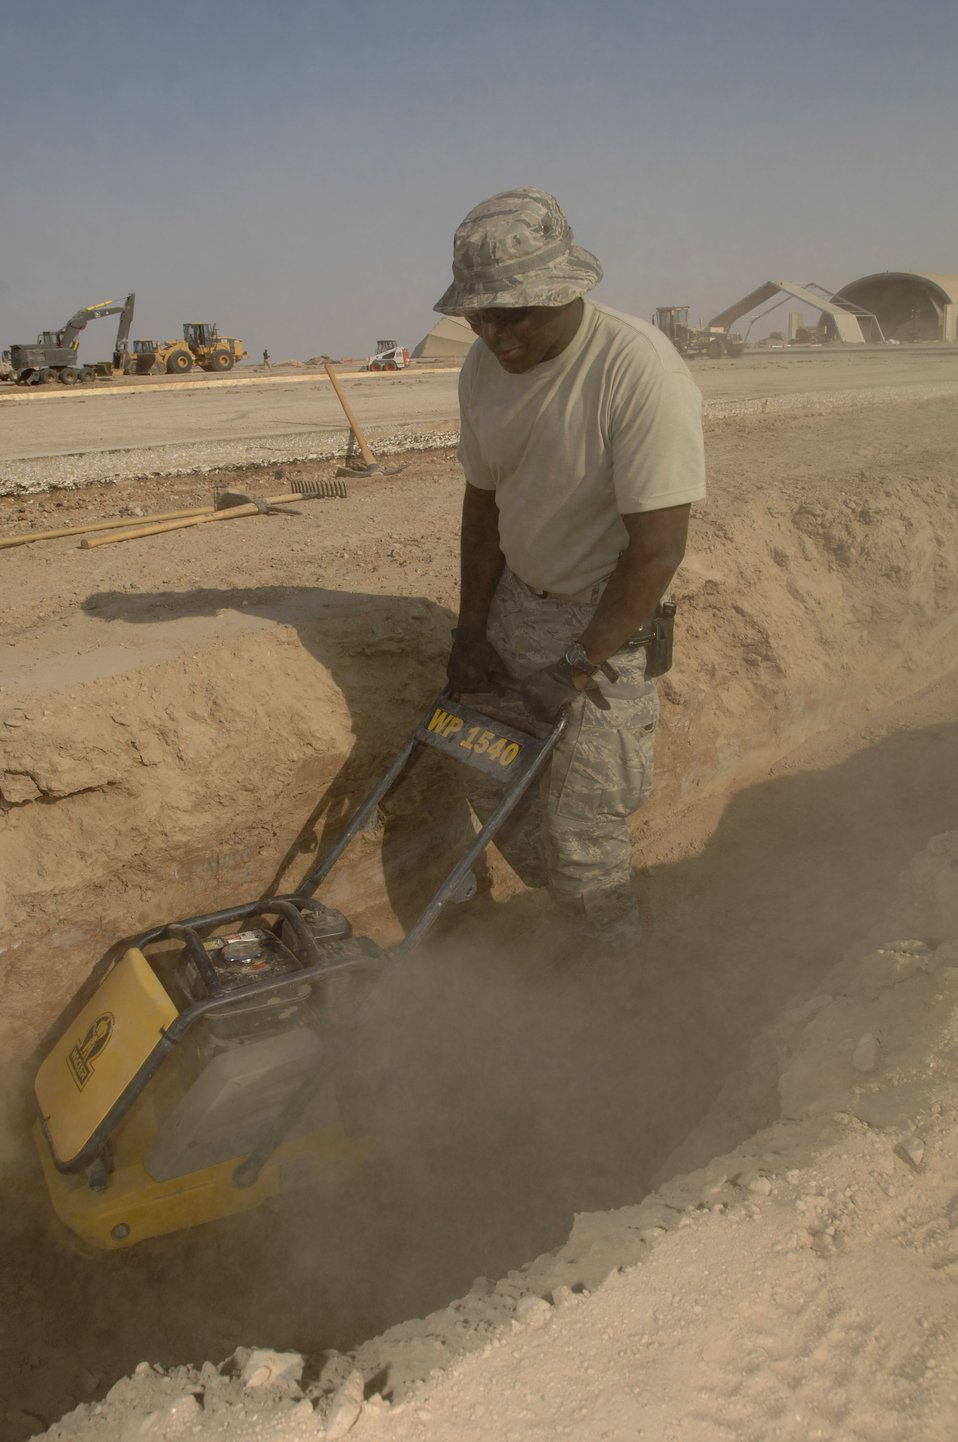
Down and Dirty

Staff Sgt. Reginald Colbert uses a tamper to compact the ground in preparation to pour concrete Oct. 3 at Ali Base, Iraq. Sergeant Colbert and other Airmen in the 407th Civil Engineer Squadron are working around the clock to build several sun shades on the flightline by November.